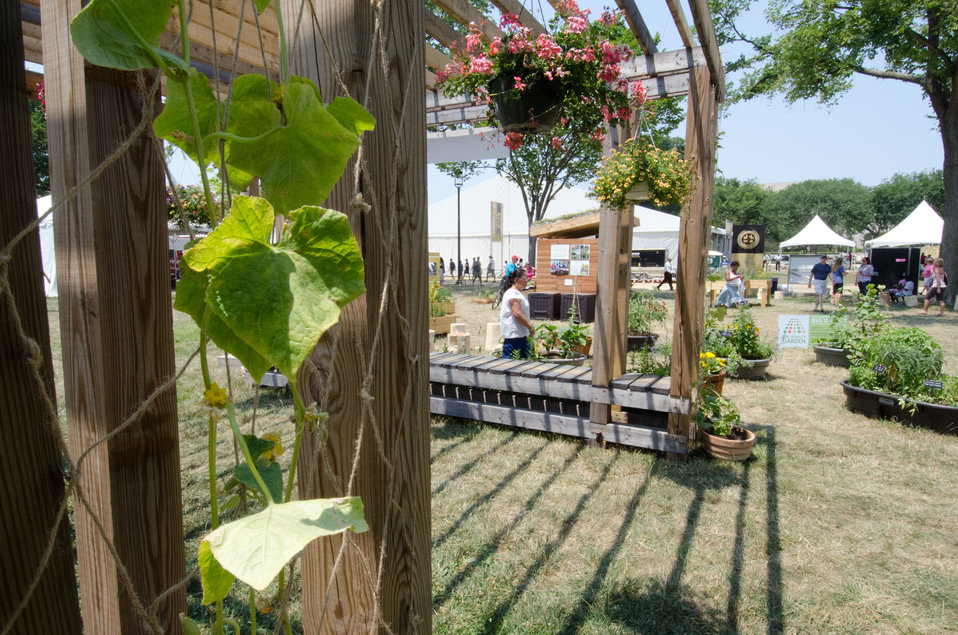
This gazebo serves as a venue for speakers and demonstrated that designs such as this provide an attractive seating area, sturdy place for hanging plants, trellis for plant vines and an ideal place to enjoy the aroma of herbs at the 2012 Smithsonian Folklife Festival in Washington, D.C., on Thursday, June 28, 2012. If left to grow, the canopy of plants serve to shade and humidify arid climates by creating a cooler microclimate. One of the three themes this year is “Campus and Community.” It celebrates the 150 years of the USDA and the Land-Grant University System. The U.S. Department of Agriculture (USDA) and the Land-Grant system extend education across the country, contributing to American agriculture success and rural prosperity. “Campus and Community” has demonstrations, discussions, hands-on activities, and entertainment to that showcase the many ways that this partnership works to improve American agriculture and rural life.